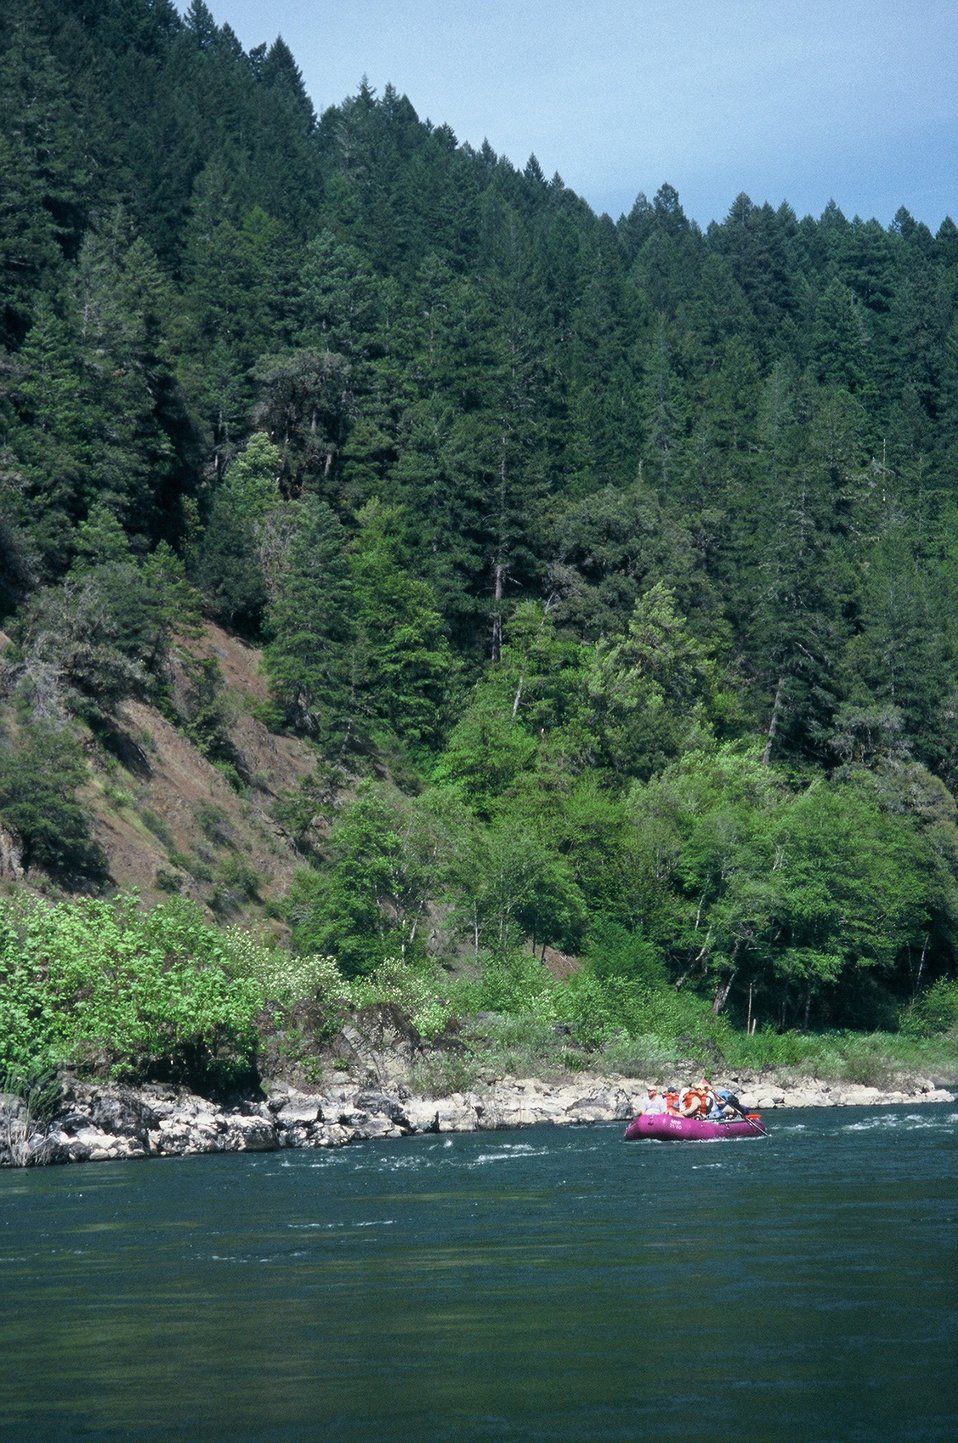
Wild section of the Rogue River from Grave Creek to Foster Bar May 19 to May 22.